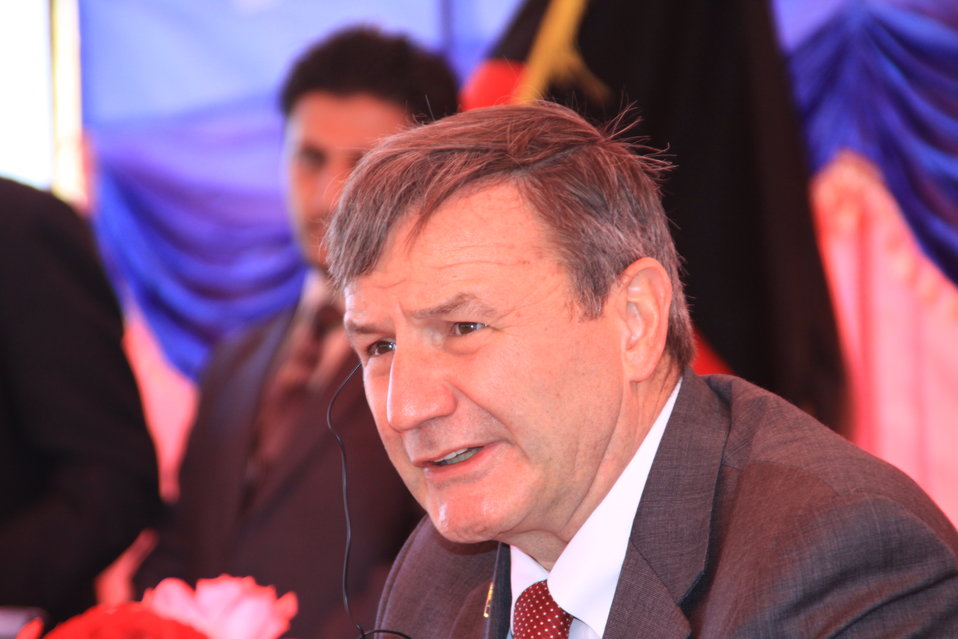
AVIPA Plus Wheat Seed Distribution 101005

US Ambassador Karl Eikenberry and USAID Acting Mission Director Kevin Brownawell joined the Minister of Agriculture, Irrigation and Livestock, H.E. Minister Mohammed Rahimi in signing a Memorandum of Understanding and distributing vouchers to area farmers for wheat and fertilizer.

US Ambassador Karl Eikenberry and USAID Acting Mission Director Kevin Brownawell joined the Minister of Agriculture, Irrigation and Livestock, H.E. Minister Mohammed Rahimi in signing a Memorandum of Understanding and distributing vouchers to area farmers for wheat and fertilizer.